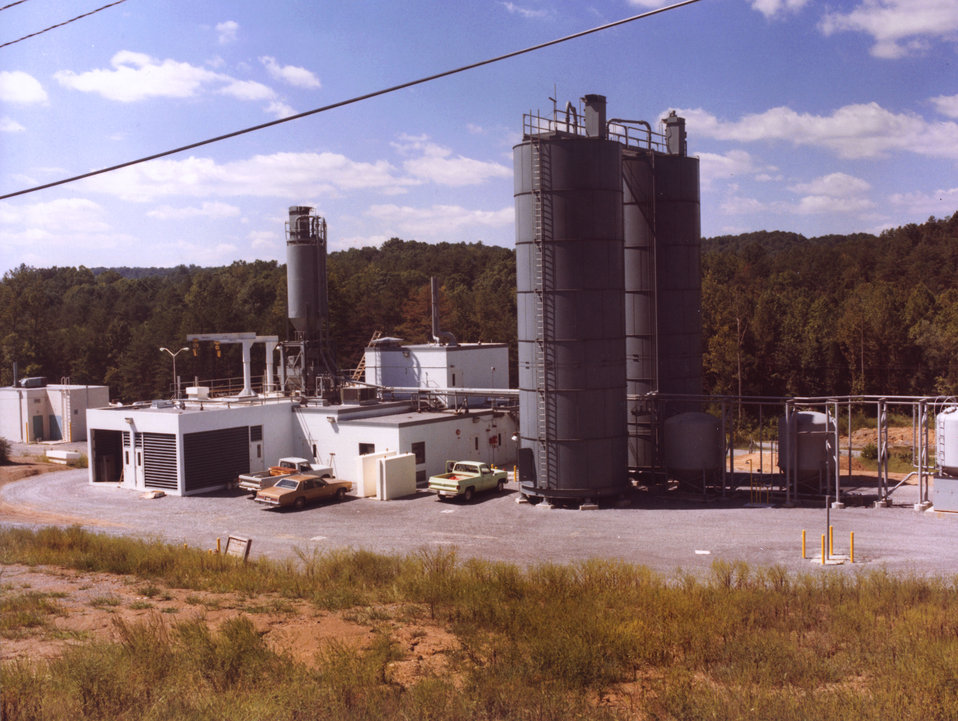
Hydrofacture